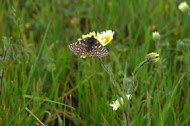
Bay checkerspot butterfly

Scientific name: Euphydryas editha bayensis
Status: Endangered